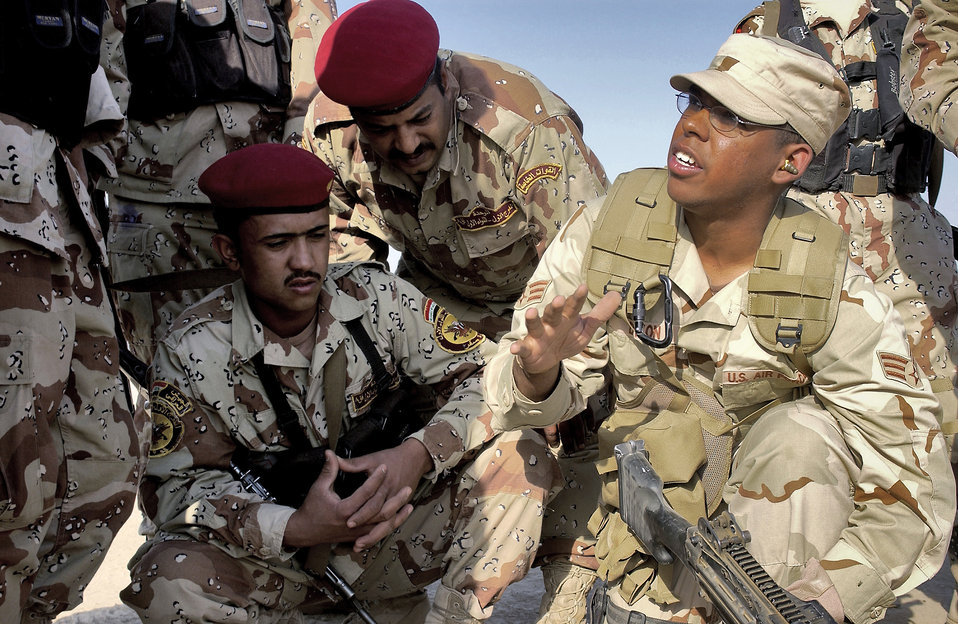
Intently listening

AD DIWANIYAH, Iraq -- Iraqi Soldiers listen intently as Senior Airman Patrick Dixon instructs on loading procedures of an M-249 Squad Assault Weapon. Airman Dixon is deployed from the 1st Combat Camera Squadron at Charleston Air Force Base, S.C.